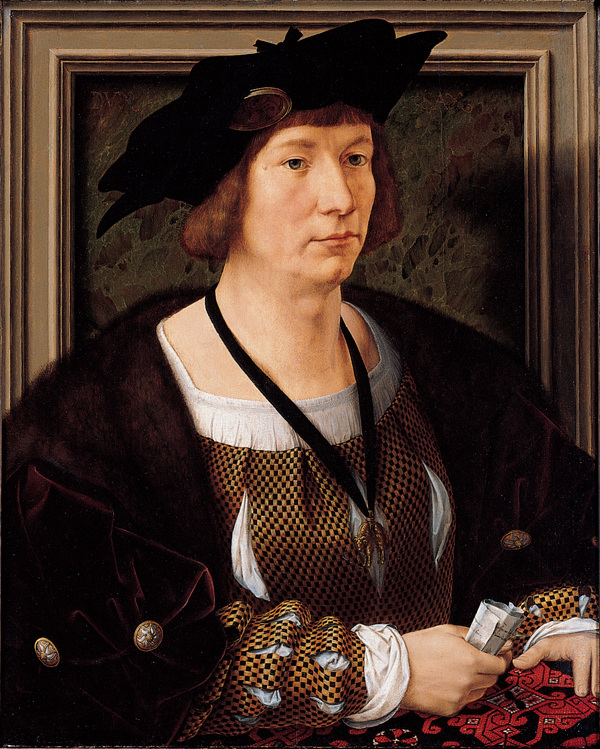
'Portrait of Hendrik III, Count of Nassau-Breda', oil on panel painting by Jan Gossart (Mabuse)